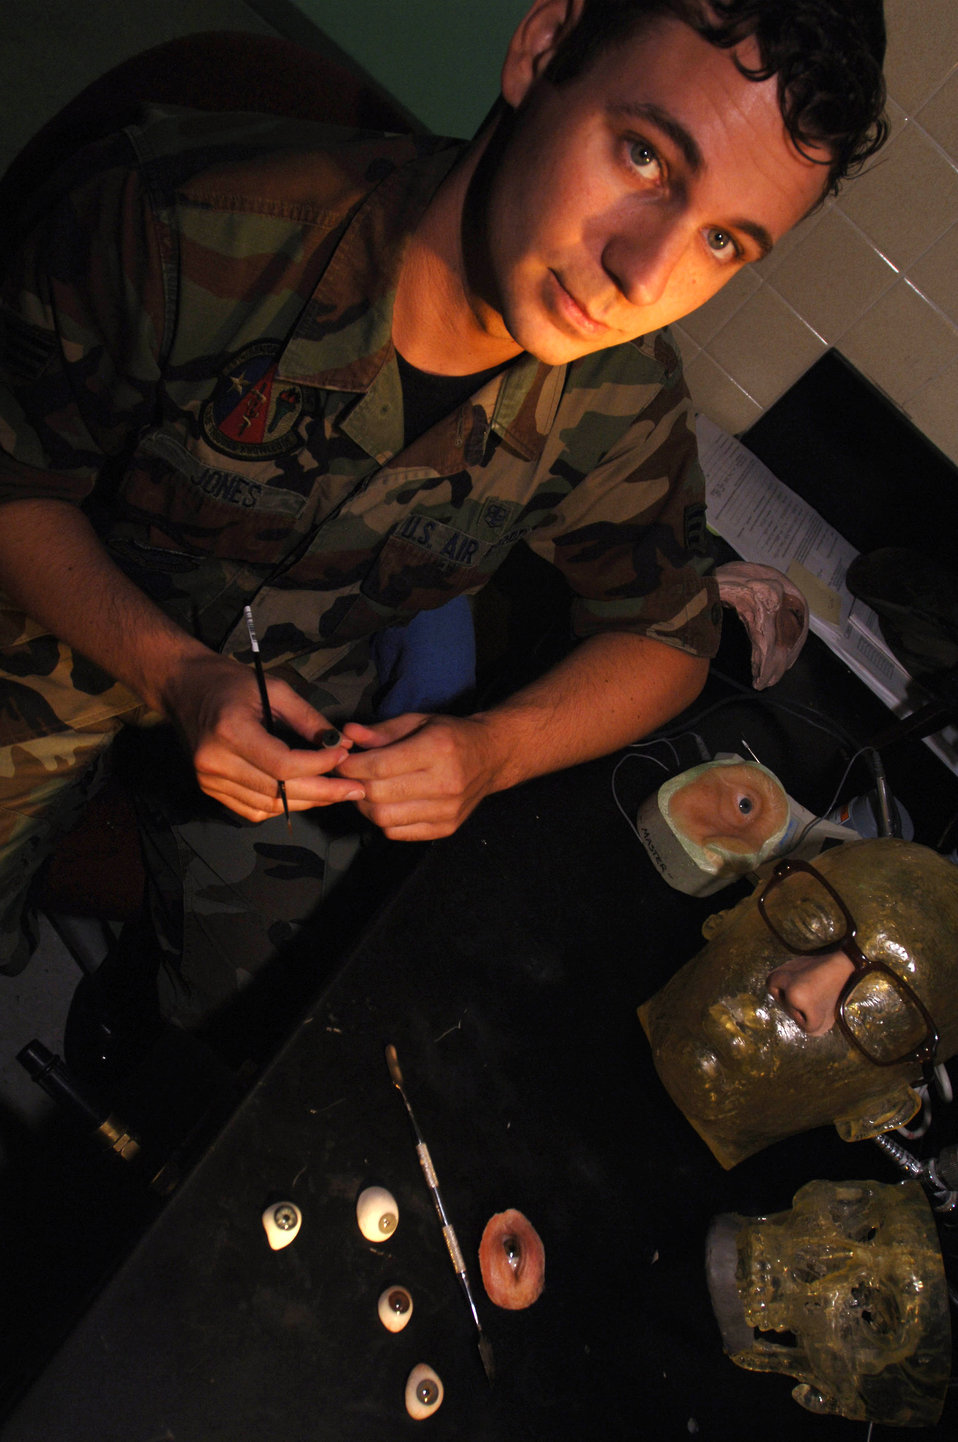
Maxillofacial prosthetic technician Senior Airman Justin Jones creates new facial features using various techniques and tools to reconstruct facial features of wounded warriors. His techniques are used to aid patients in their physical and psychological recovery from injuries to the neck and face. Airman Jones is assigned to the 59th Dental Squadron at Lackland Air Force Base, Texas.